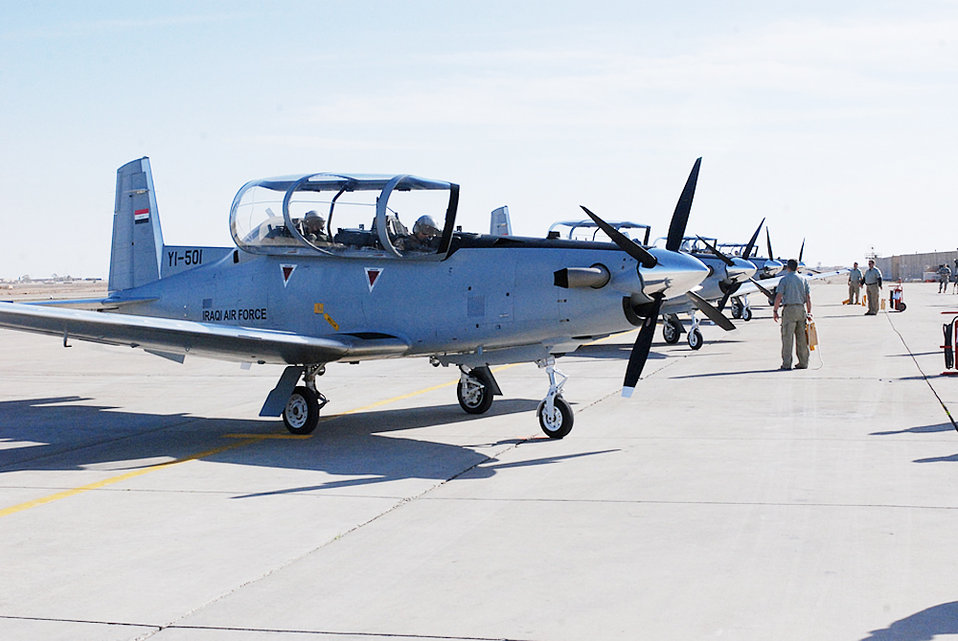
Airmen to train Iraqi air force college students

T-6A trainer aircraft will provide a platform for Iraqi flight instructors who begin instructor training in March to teach Iraqi air force college cadets the skills they will need to fly military aircraft.